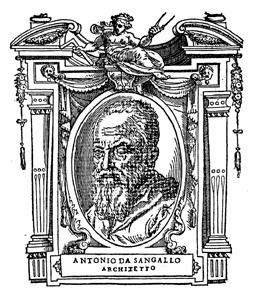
Illustratio from 'Le Vite' by Giorgio Vasari, edition of 1568. For the artist portrayed see filename